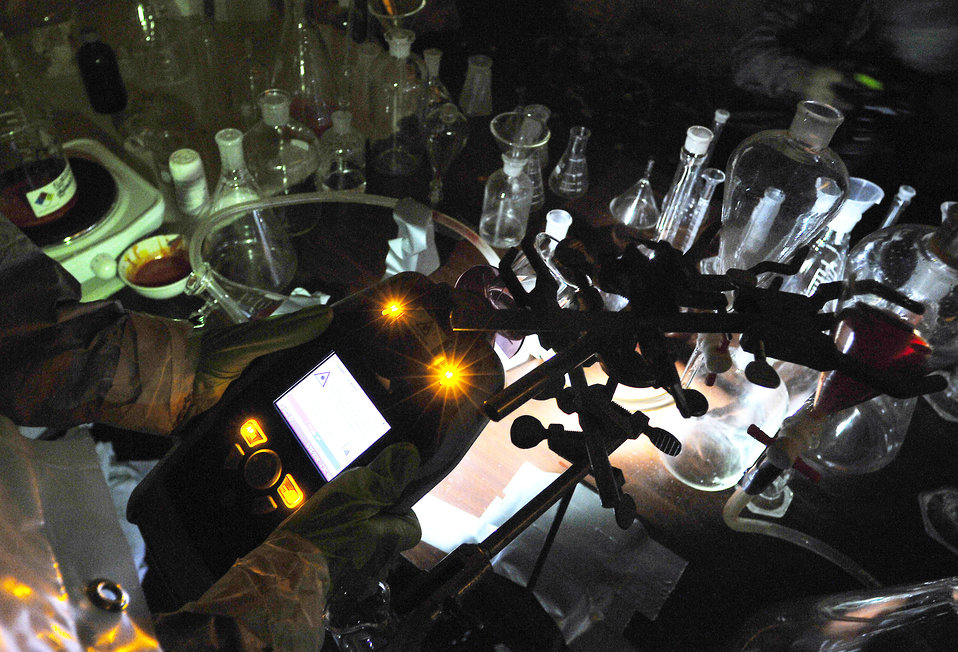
Airmen in Europe test threat responses

Staff Sgt. Joshua McDowell test chemicals in a simulated emergency environment during the U.S. Air Forces in Europe 2009 Chemical, Biological, Radiological, and Nuclear Challenge June 23 at Ramstein Air Base, Germany. Sergeant McDowell is a 52nd Civil Engineer Squadron emergency manager.